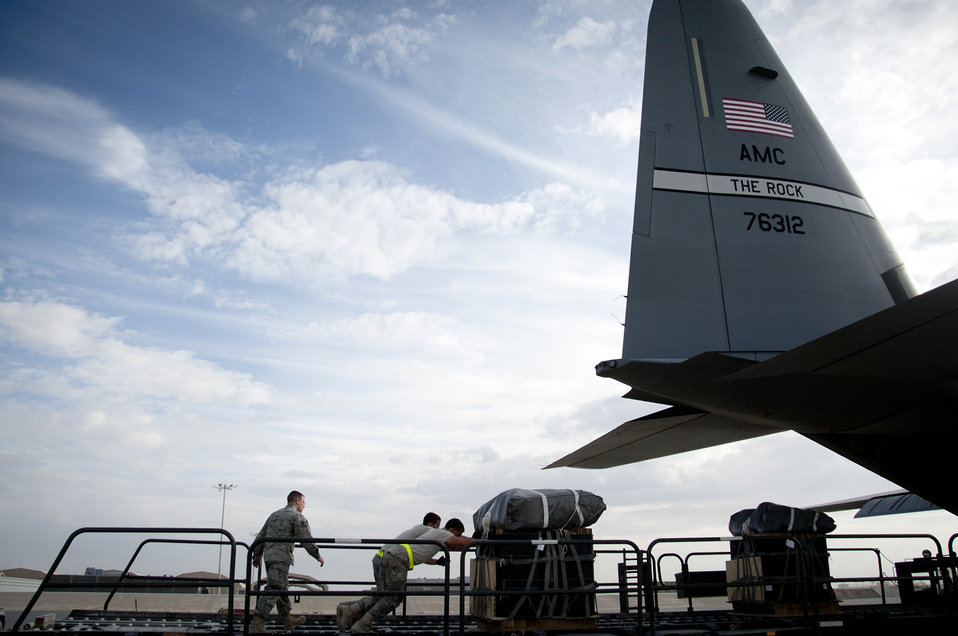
Push!

Airmen load pallets of cargo into a 772nd Expeditionary Airlift Squadron C-130J Hercules Nov. 7, 2011, at Kandahar Airfield, Afghanistan. A parachute is attached to each pallet allowing a 99 percent accuracy of the airdropped cargo to be recovered undamaged by ground troops needing the supplies.